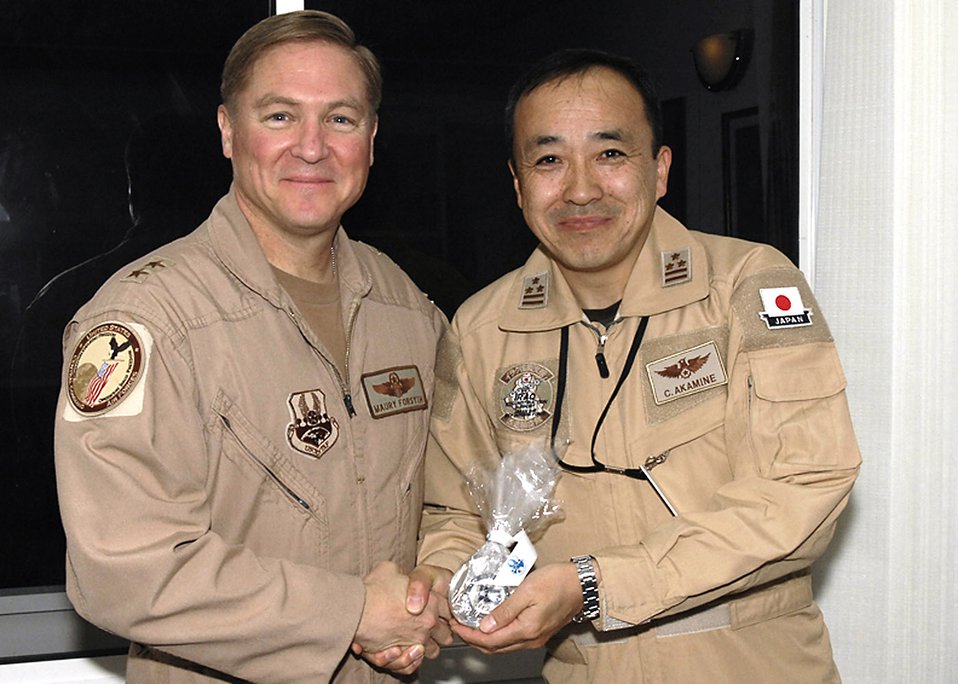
Top Japanese airlift commander visits CAOC

Maj. Gen. Maurice H.